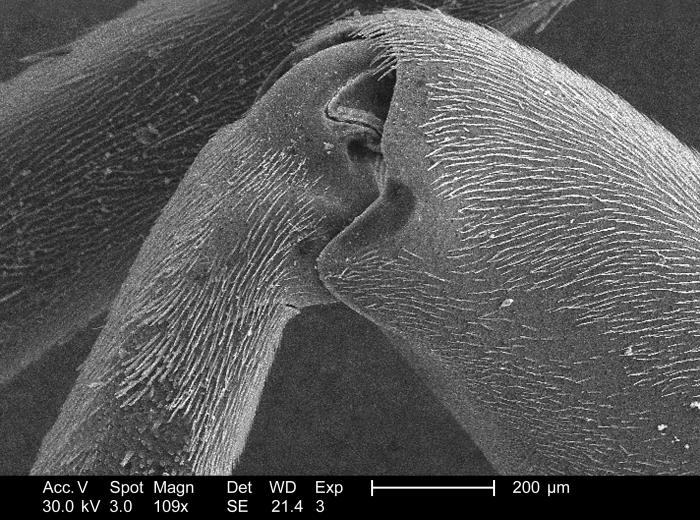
Magnified 109x, this 2005 scanning electron micrograph (SEM) revealed that this unidentified wasp's leg appendage bore many sensorial 'hairs', known as 'setae' on its cuticular surface. These hairs are sensitive to changes in the organism's environment including changes in temperature, wind speed and direction, chemical variations, and changes to the physical make-up of its surroundings, i.e., tactile interaction. These setae, along with the insect's antennae, eyes, and wings offer the organism a detailed comprehensive depiction of its immediate environment.